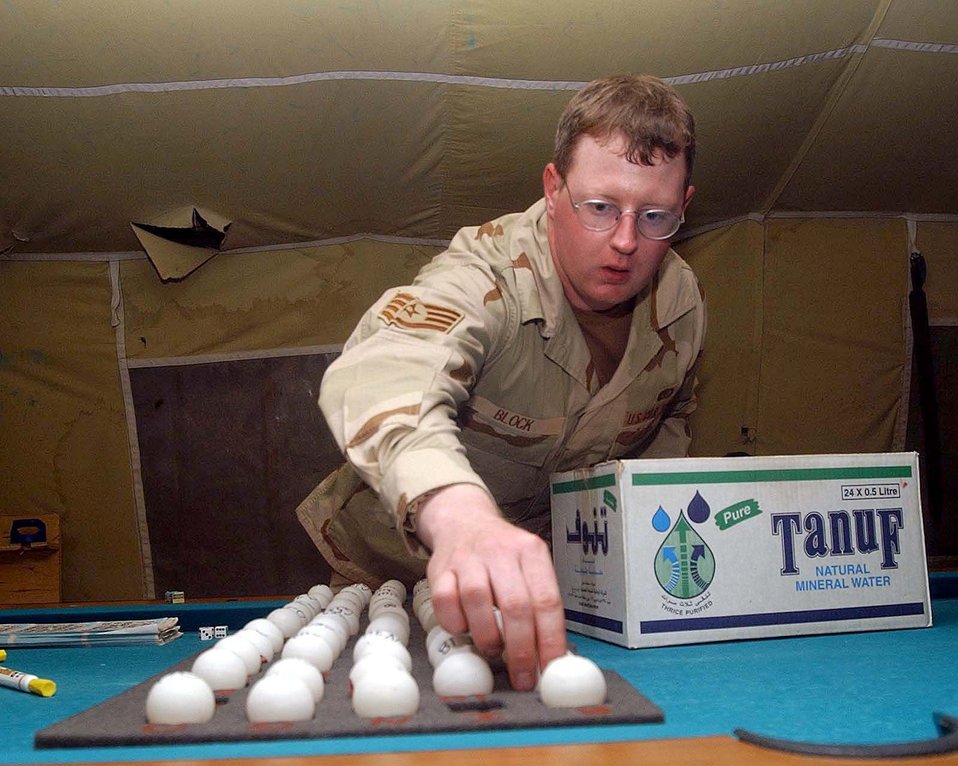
Boosting morale

BAGRAM AIR BASE, Afghanistan -- Staff Sgt. Chris Block calls out a number during a bingo game in the morale tent here Oct. 6. Block is one of two services airmen assigned to the 455th Expeditionary Services Squadron.